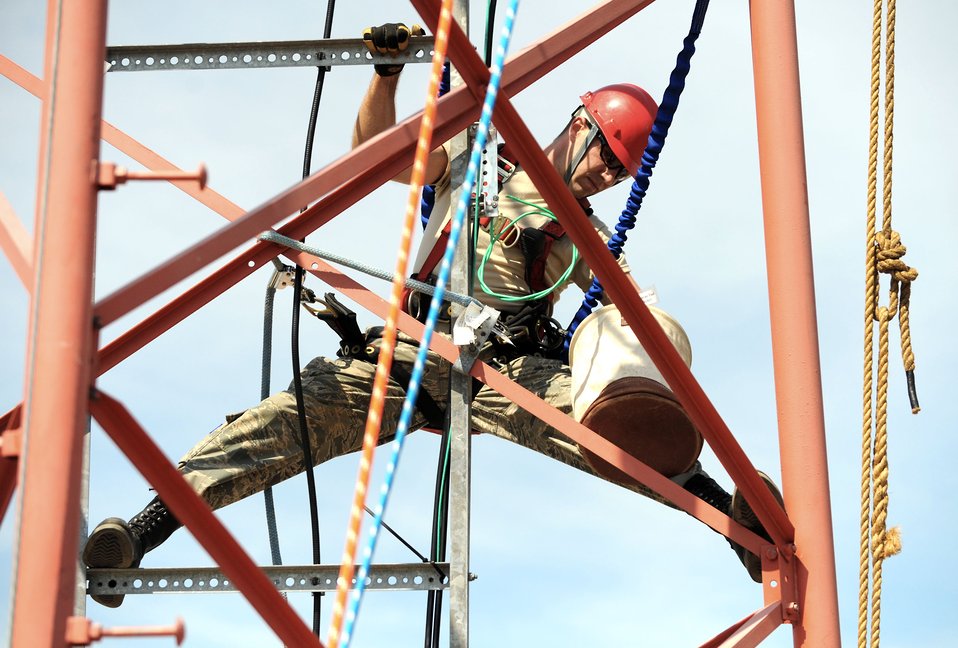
Upgrading communications tower

An Airman balances on a communications tower July 22, 2010, while adding improvements at F.S. Gabreski Air National Guard Base in Westhampton Beach, N.Y. He is assigned to the New York Air National Guard's 213th Engineering Installation Squadron at nearby Stewart ANGB in Newburgh.